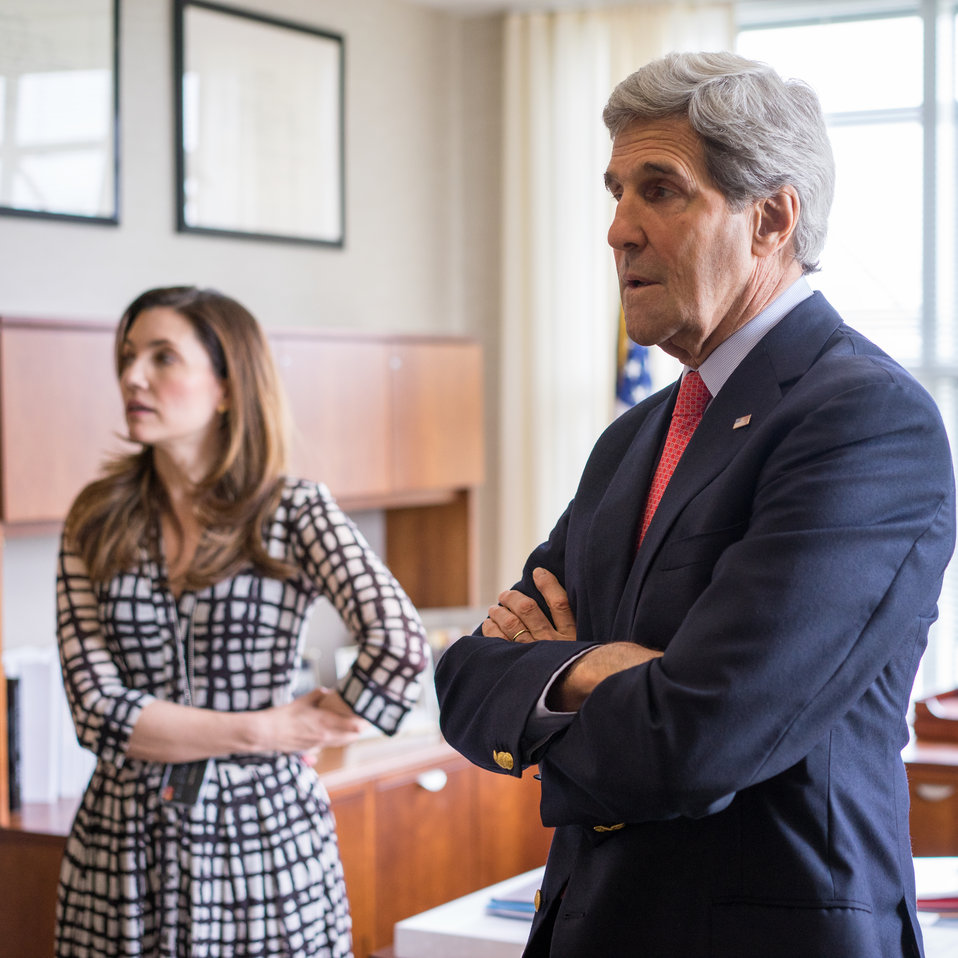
Secretary Kerry Meets With ECA Assistant Secretary Ryan and Her Staff

U.S. Secretary of State John Kerry speaks with Assistant Secretary of State for Educational and Cultural Affairs, while he visited the Bureau of Educational and Cultural Affairs offices at the U.S. Department of State in Washington, D.C., on May 9, 2014.